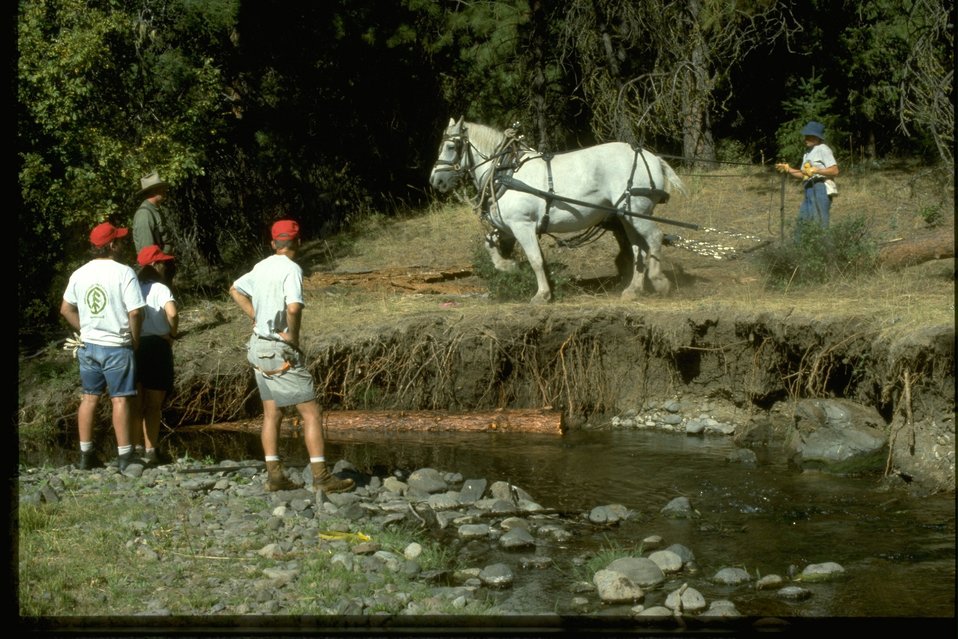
People volunteering their time at the Jenny Creek Project.